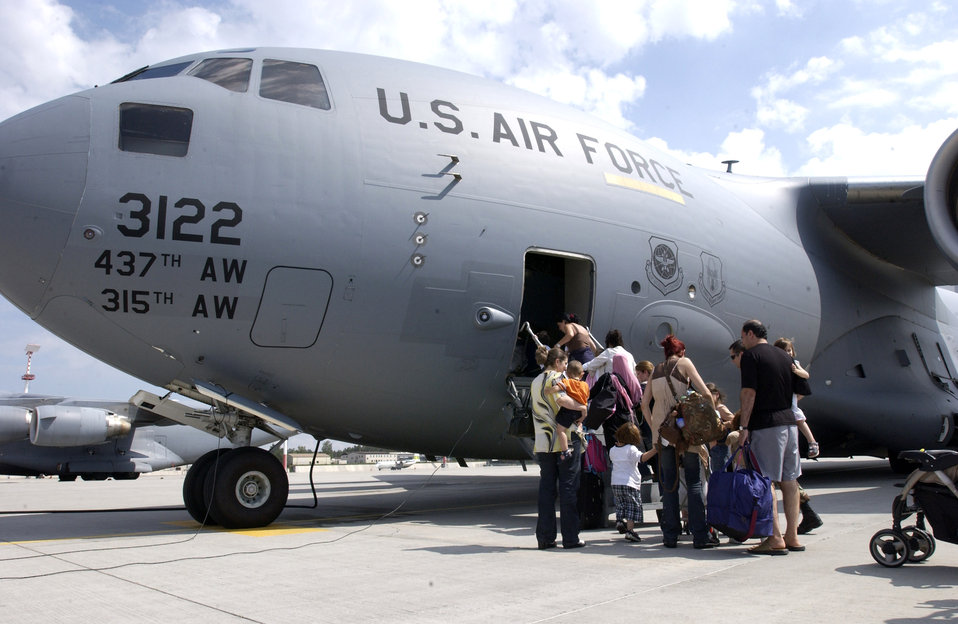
Heading to America

Americans begin boarding a C-17 Globemaster III at Ramstein Air Base, Germany, on July 23. Airmen at Ramstein AB provided humanitarian assistance for American citizens departing the Lebanon crisis on their way to the United States.